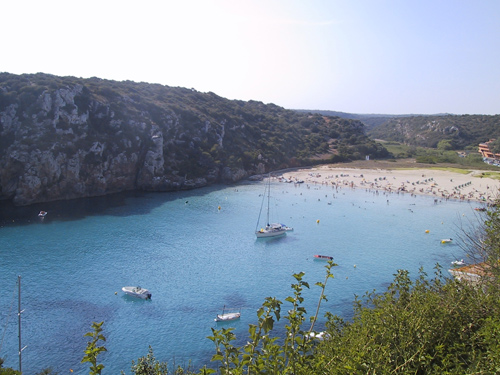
Cala En Porter, Minorca.